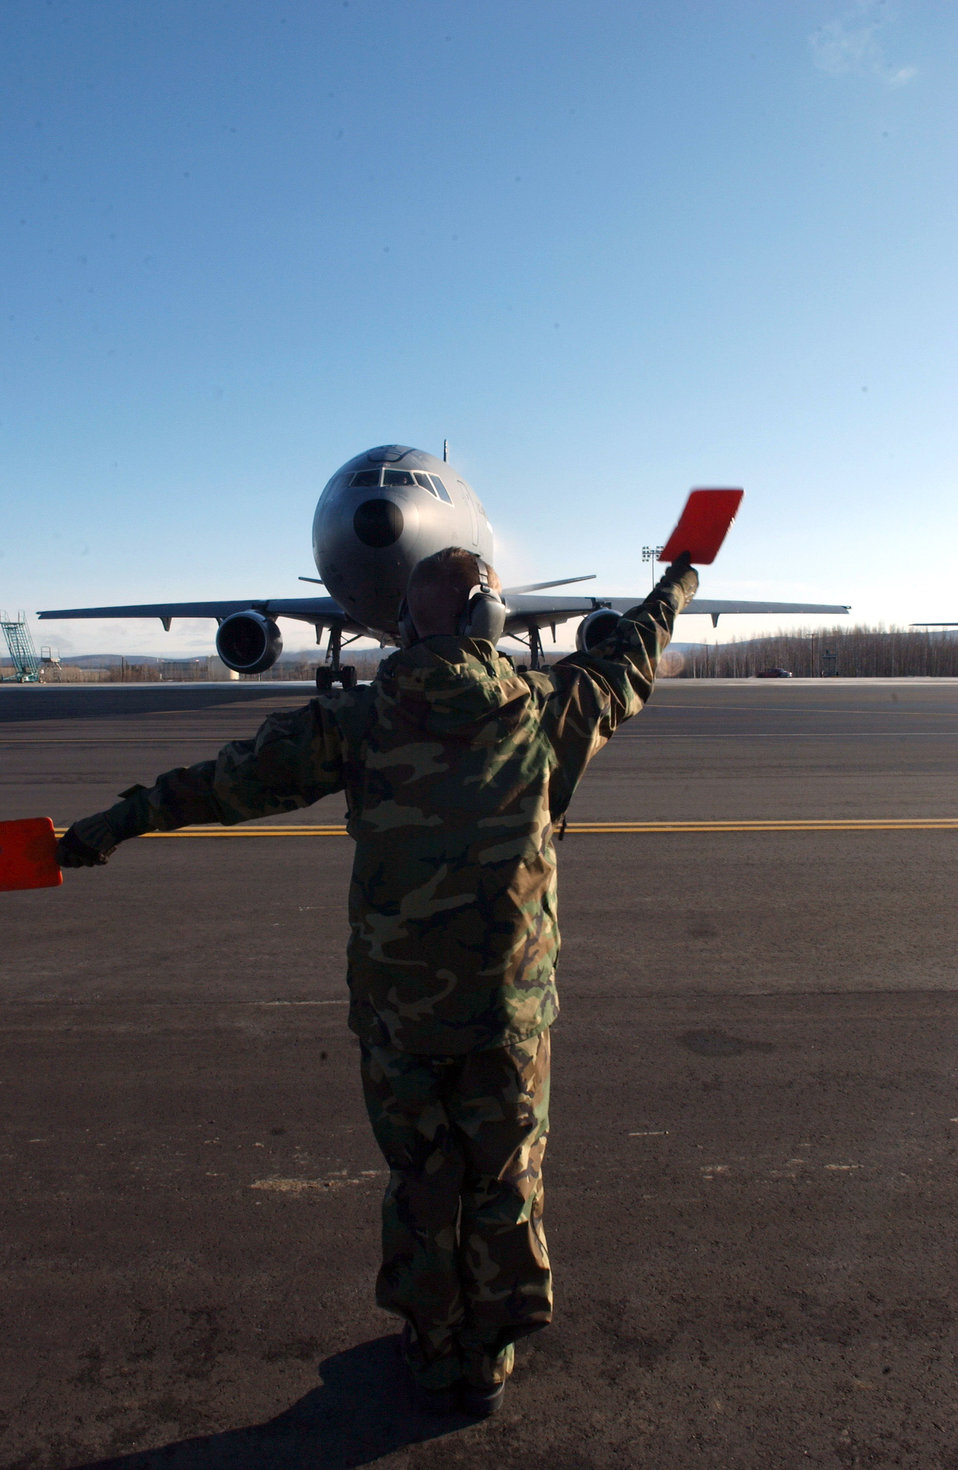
Air combat ready at Red Flag-Alaska

Staff Sgt. Martin Walker marshals a KC-10 Extender April 13 at Eielson Air Force Base, Alaska, during Red Flag-Alaska 07-1. This aircraft supports Red Flag-Alaska by performing aerial refueling allowing longer flight time for fighter jets conducting simulated air combat training missions over the Pacific Alaskan Range Complex. Sergeant Walker is assigned to the 305th Maintenance Squadron at McGuire AFB, N.J.